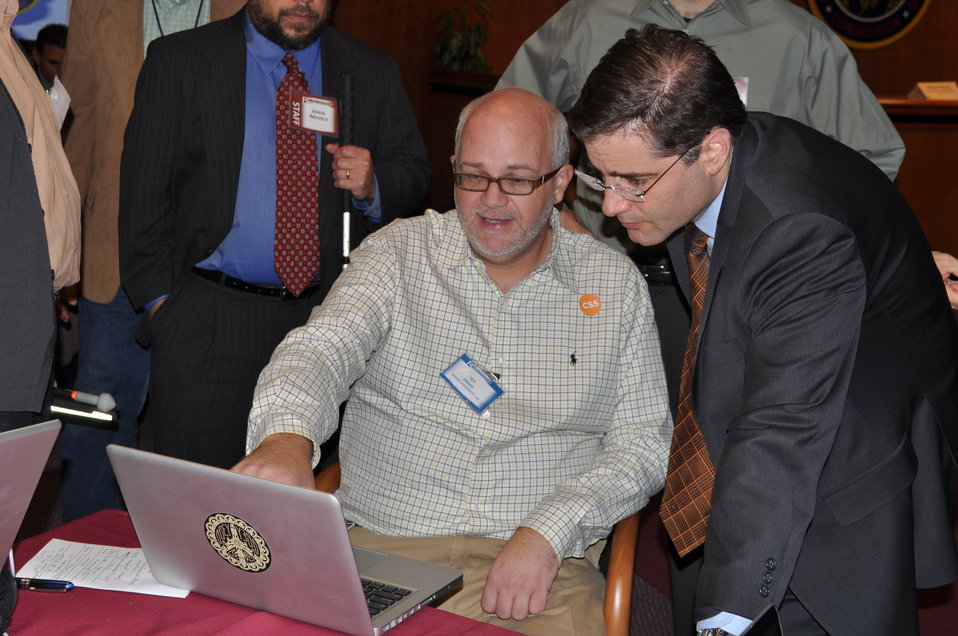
FCC Open Developer Day

Yahoo! Accessibility Lab's Ted Drake shows FCC Chairman Julius Genachowski some of the tech on display at FCC Open Developer Day.